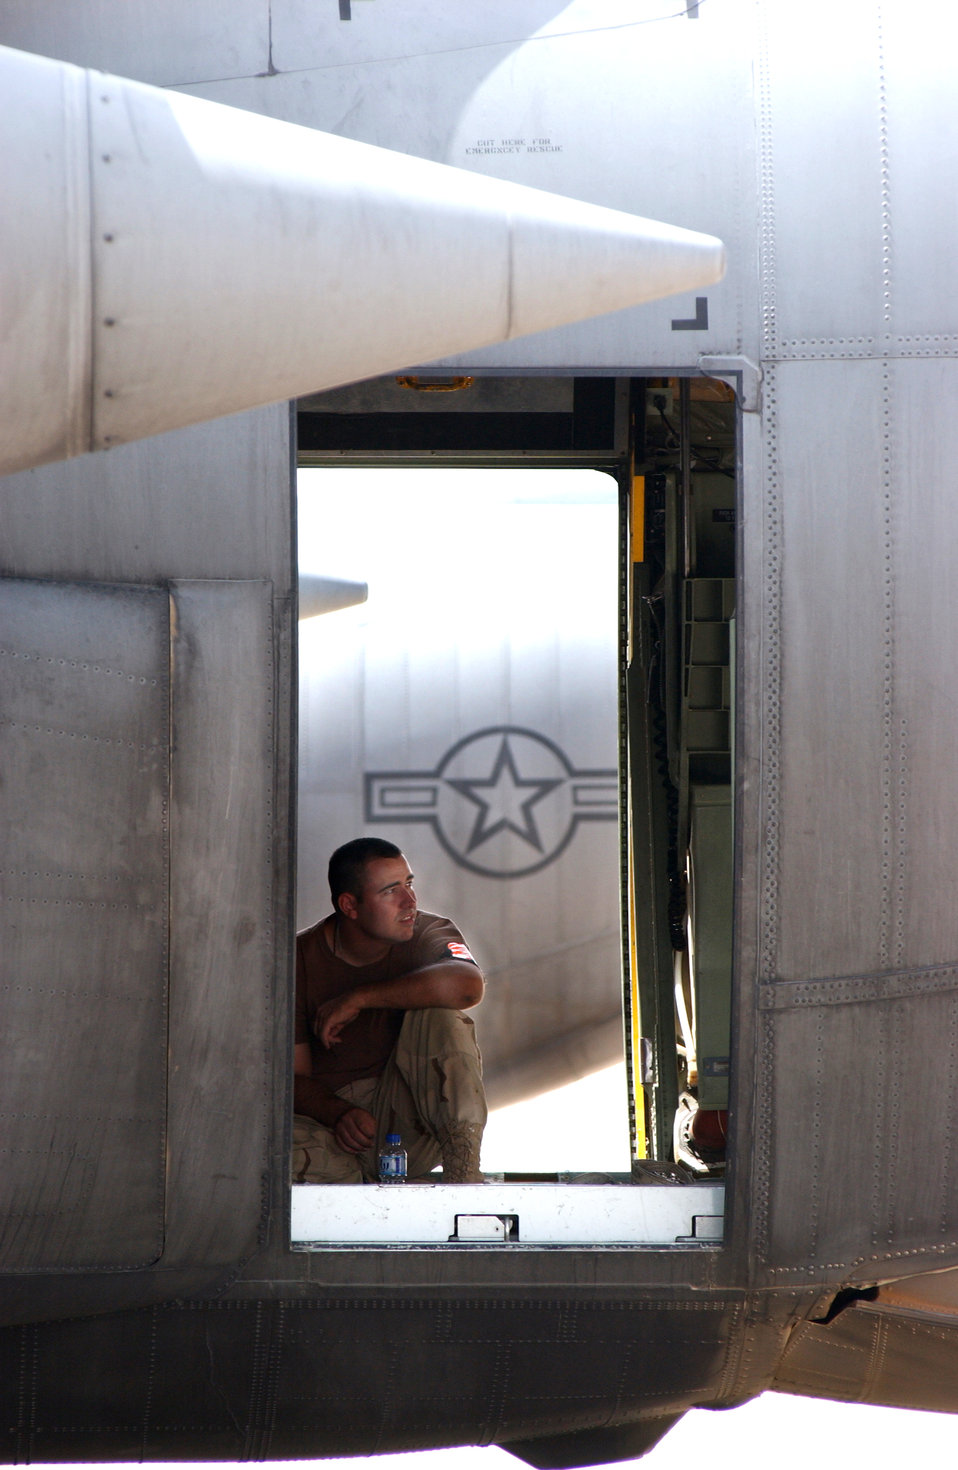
Cool spot

OPERATION IRAQI FREEDOM -- Staff Sgt. Paul Smith takes a break from the heat in a C-130 Hercules on the flightline at a forward-deployed location in Southwest Asia. The C-130s arrived May 3 to help with stabilization efforts inside Iraq. Smith is a crew chief deployed with the West Virginia Air National Guard's 130th Airlift Wing at Charleston.